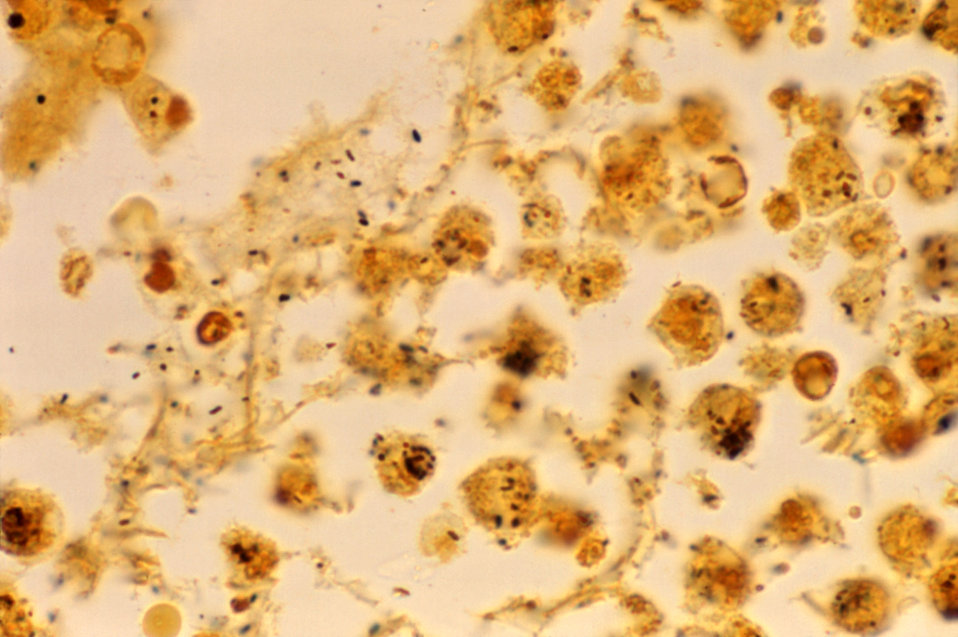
This light photomicrograph depicted cytoarchitectural details seen in a lung tissue specimen from a Knoxville patient with fatal pneumonia due to Legionnaires' disease. The tissue was stained using Dieterle's silver stain, which employs a silver-impregnation staining technique, the results of which reveals the presence of Legionella pneumophila bacteria.Legionellosis disease has two distinct forms:-Legionnaires' disease